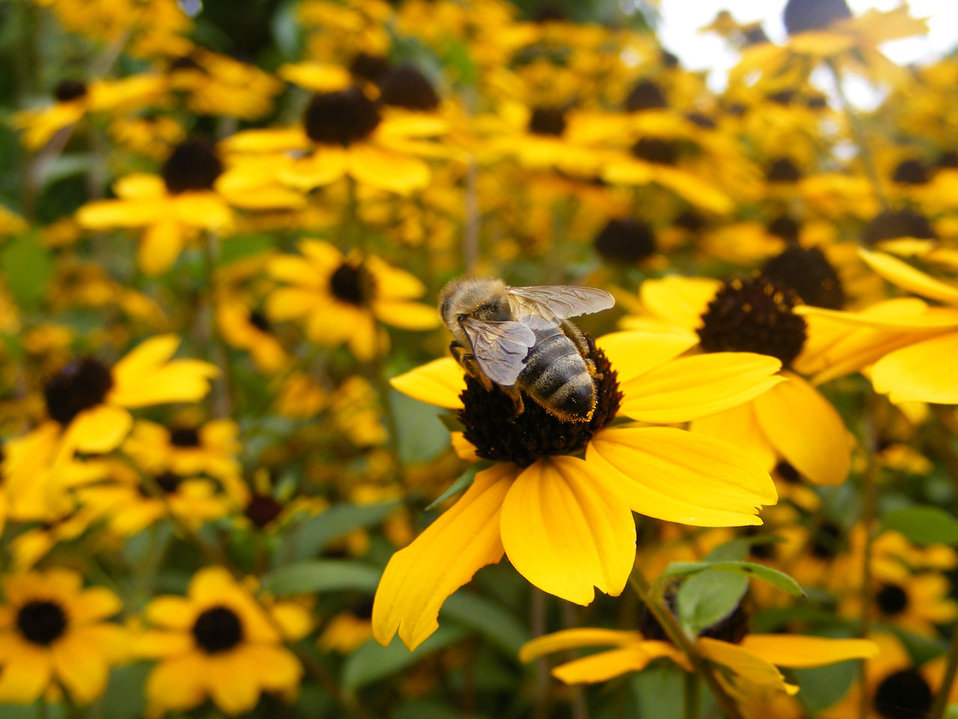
Bee garden.